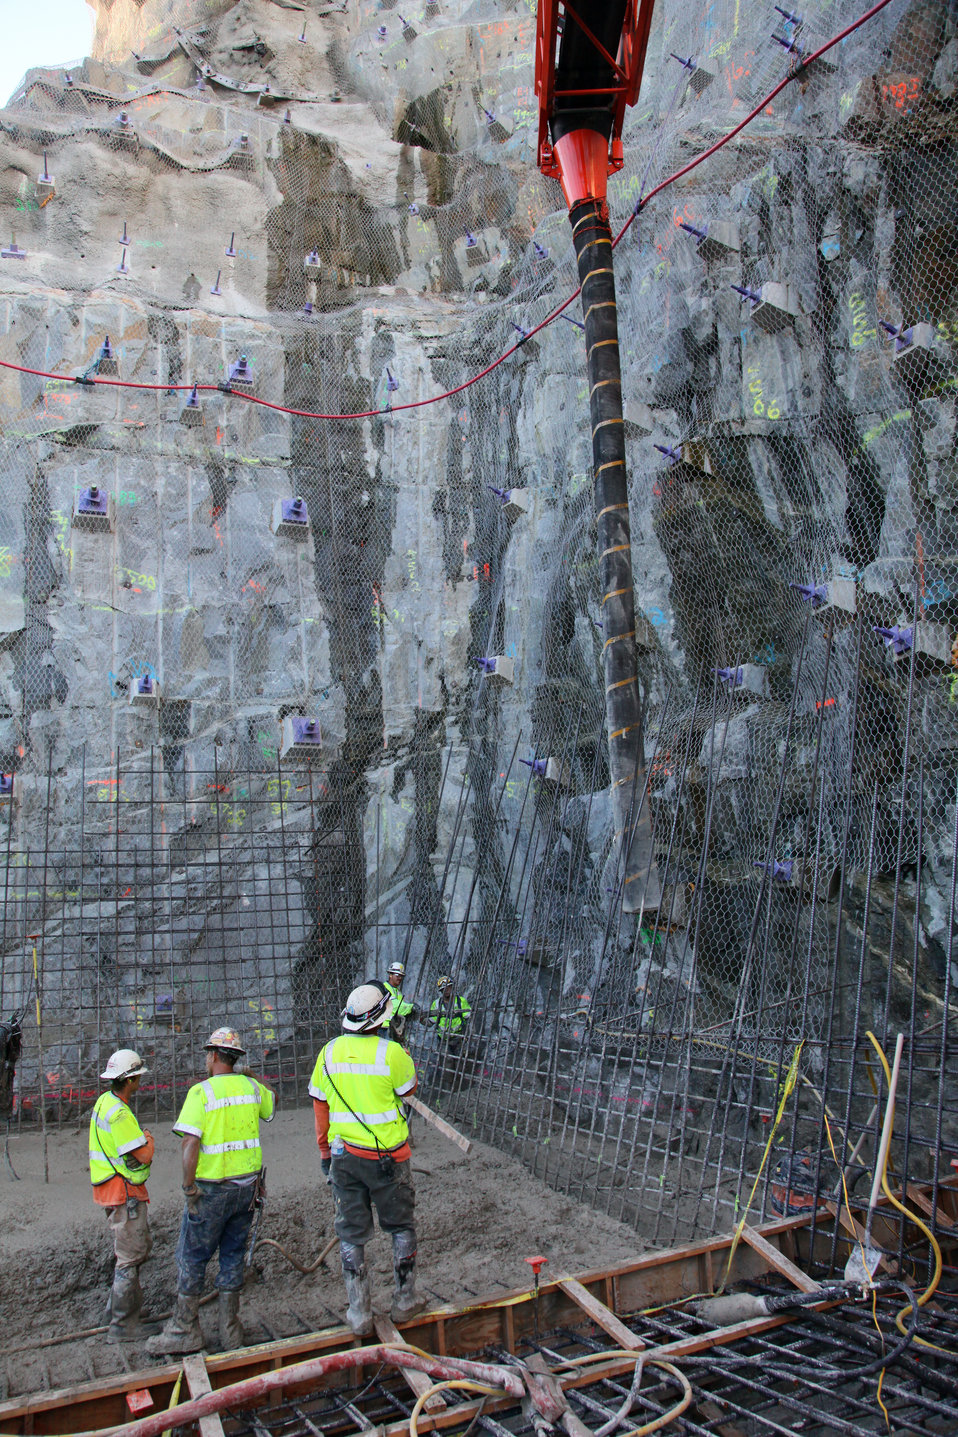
Concrete Placement at the Folsom Dam auxiliary spillway construction

Contractors for the U.S. Army Corps of Engineers Sacramento District use an onsite batch plant and a series of conveyors (top right) for concrete placement at the auxiliary spillway at the Folsom Dam Joint Federal Project in Folsom, Calif., June 7, 2012. The Folsom Dam Joint Federal Project is a joint effort of the Corps, U. S. Bureau of Reclamation, the Central Valley Flood Protection Board and the Sacramento Area Flood Control Agency to improve the safety of the current dam and reduce flood risk for the greater Sacramento area.